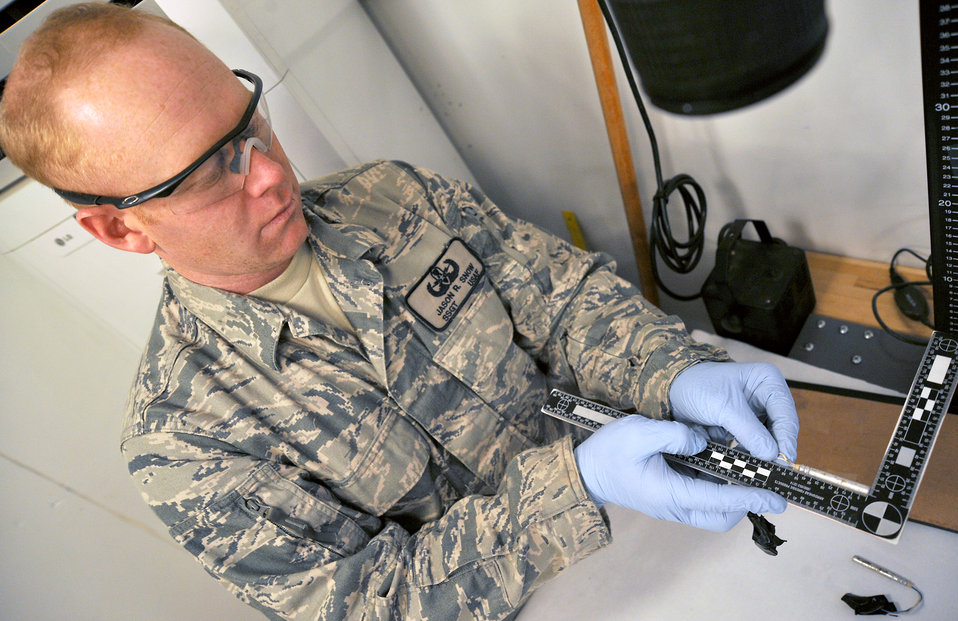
Joint task force Airmen

Staff Sgt. Jason Snow holds a blasting cap beside a ruler to photograph the measurements Dec. 26, 2010, on Camp Victory, Iraq. Sergeant Snow is the NCO in charge of the Combined Explosive Exploitation Cell triage laboratory for Combined Joint Task Force Troy. CJTF Troy is dedicated to countering IEDs and saving lives of Iraqi and joint forces conducting Operation New Dawn, and one key responsibility of CJTF Troy and CEXC members is neutralizing the threat of improvised explosive devices through collection and exploitation of IED evidence and related intelligence.